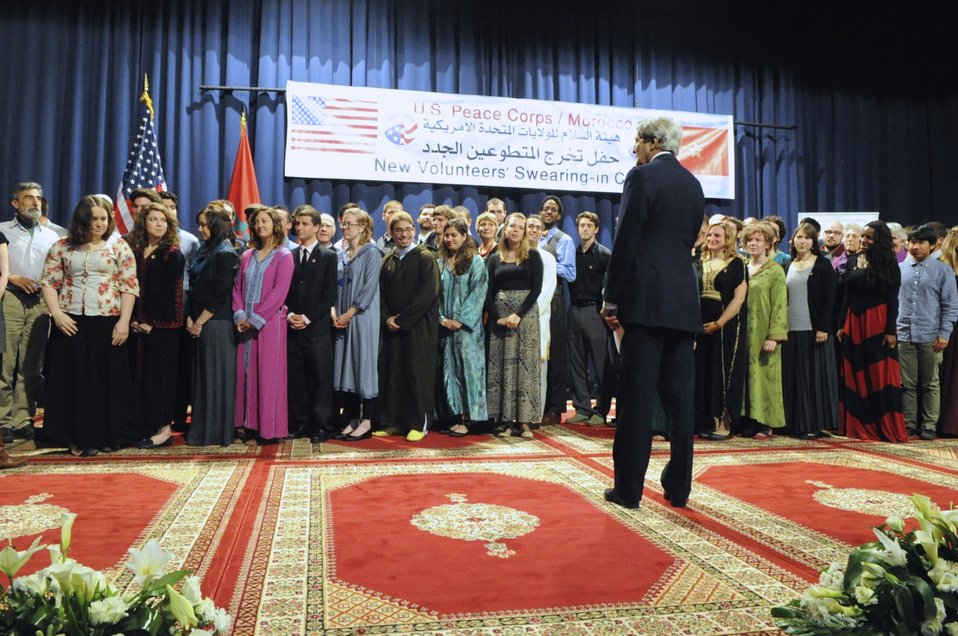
Secretary Kerry Addresses Peace Corps Volunteers in Morocco

U.S. Secretary of State John Kerry addresses over 100 incoming Peace Corps volunteers for their service to the country and the world before swearing them in during a ceremony in Rabat, Morocco, on April 4, 2014.